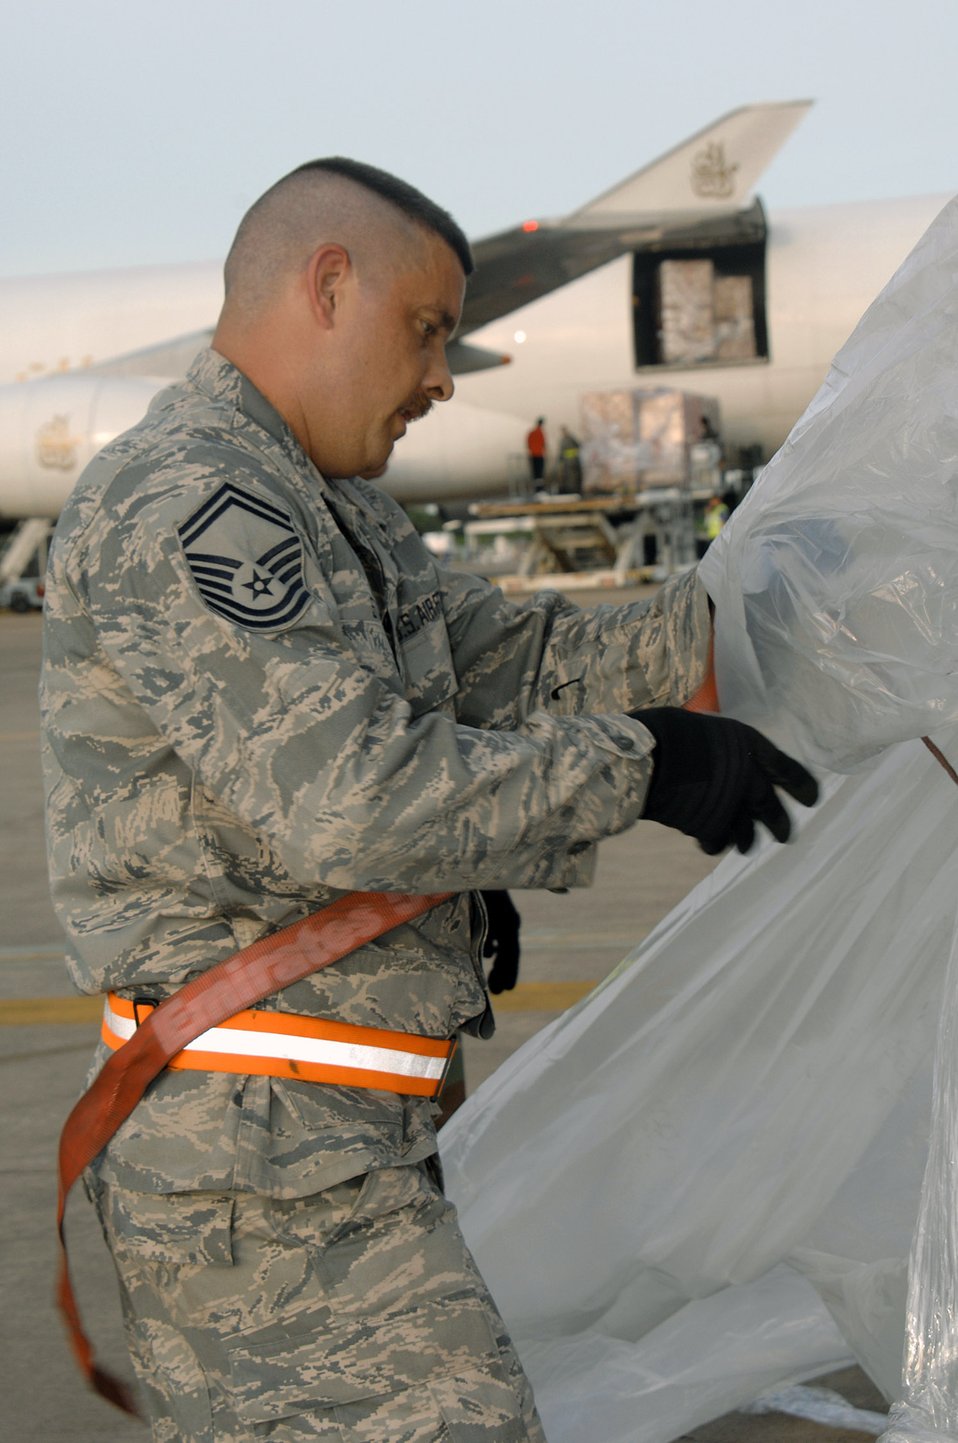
Help is on the way

Senior Master Sgt. Gregory Stone removes plastic lining from a pallet of supplies offloaded from a Boeing 747 commercial airplane May 16 at Utapao Thai Royal Navy Air Base, Thailand. The humanitarian aid supplies are to be delivered to Burma. Sergeant Stone is from the 36th Contingency Response Group at Andersen Air Force Base, Guam.